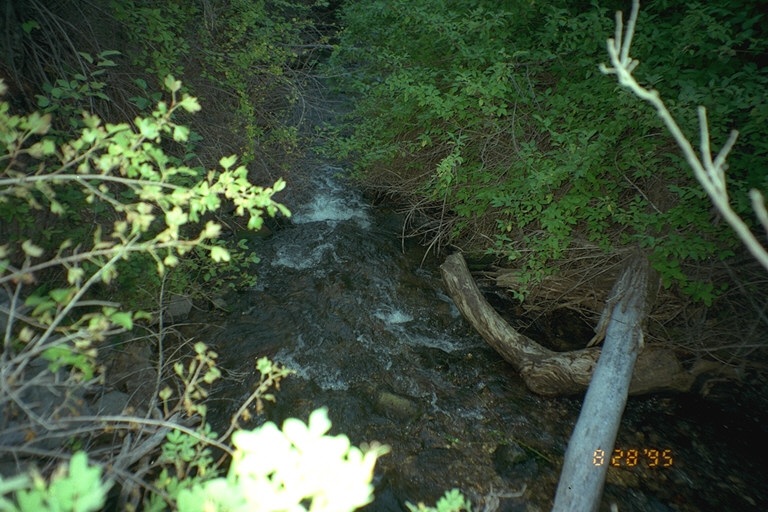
Riparian area Public Lands Salmon Field Office UCSC Upper Columbia Salmon Clearwater District